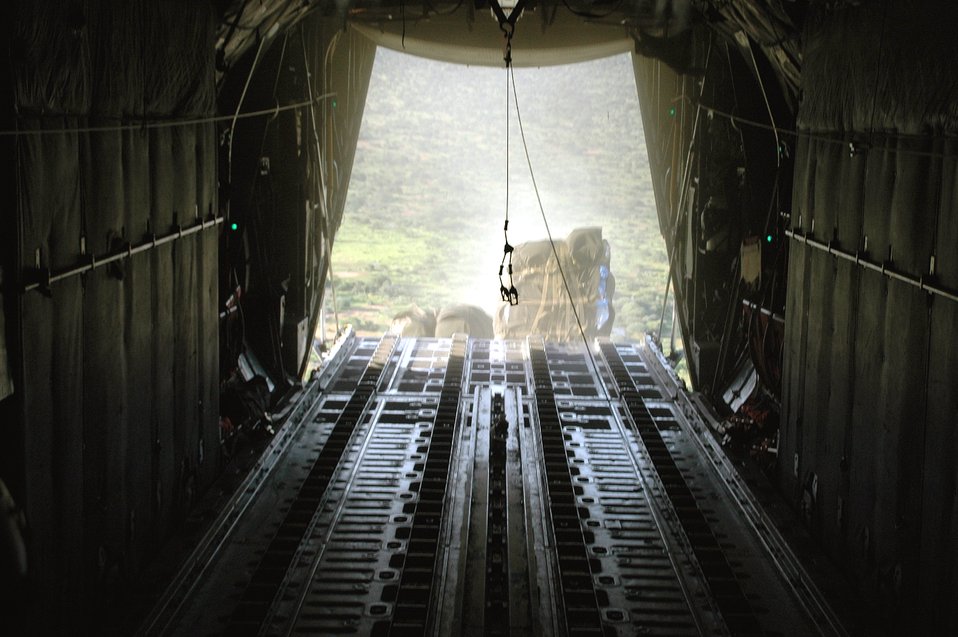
Operation Unity Knight brings relief to Kenya

Supplies of tents, tarps and mosquito netting roll out the back of a C-130 Hercules during an air drop Dec. 9. The Air Force is dropping more than 240,000 pounds of supplies to flood refugees in eastern Kenya. After weeks of rain in Dadaab region in Kenya, camps housing about 160,000 Somali refugees who fled their country 14 years ago following an uprising were damaged and many crops were destoyed. The Combined Joint Task Force - Horn of Africa military officials monitoring the developments began Operation Unity Knight and sent an Air Force C-130 assigned to the 379th Air Expeditionary Wing based in Southwest Asia because the roads in the area were impassable.